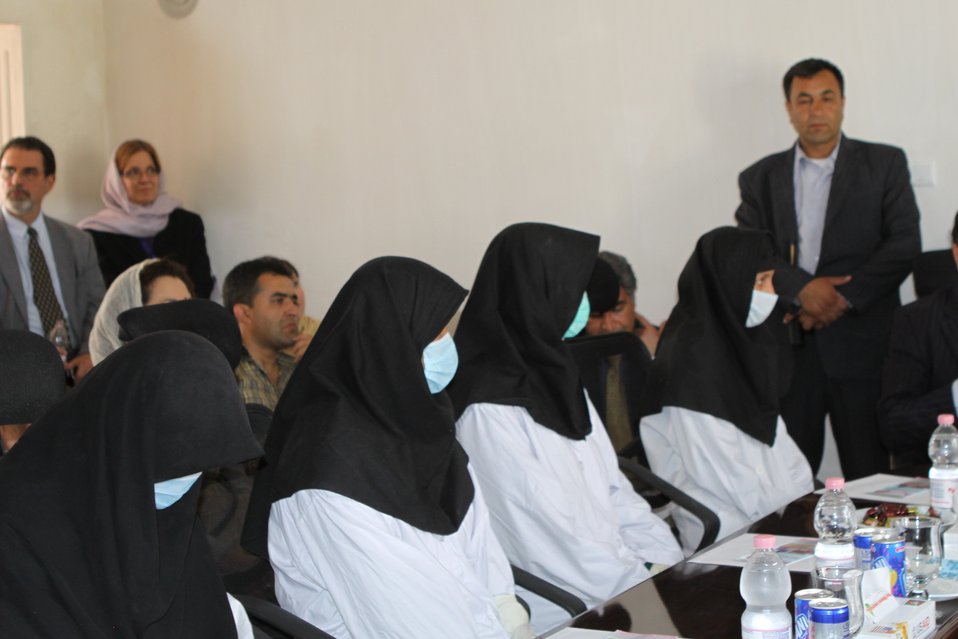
100525 Hirat Marble Conference 853